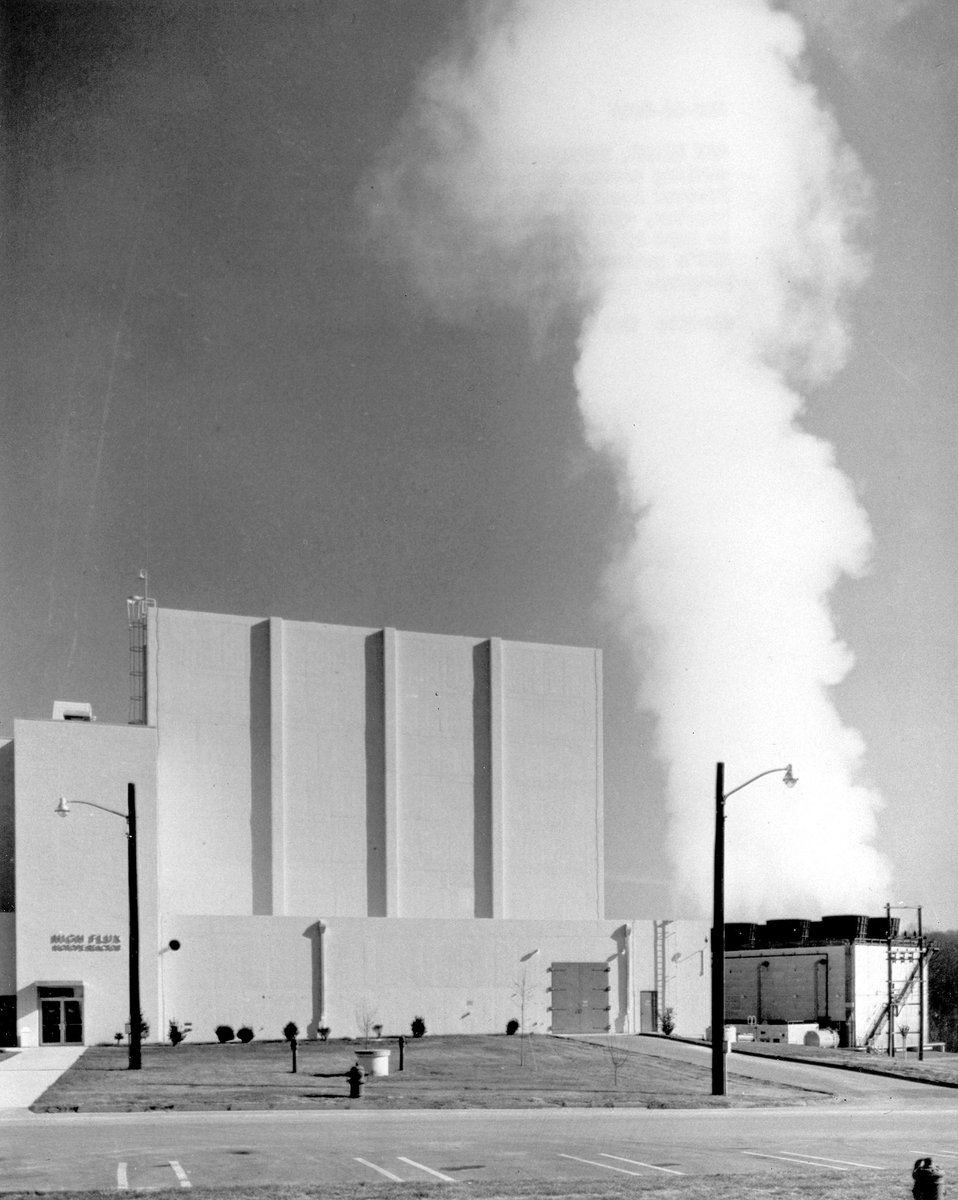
Steam rises skyward from cooling towers which service the High Flux Isotope Reactor located in the adjacent building. c. 1968